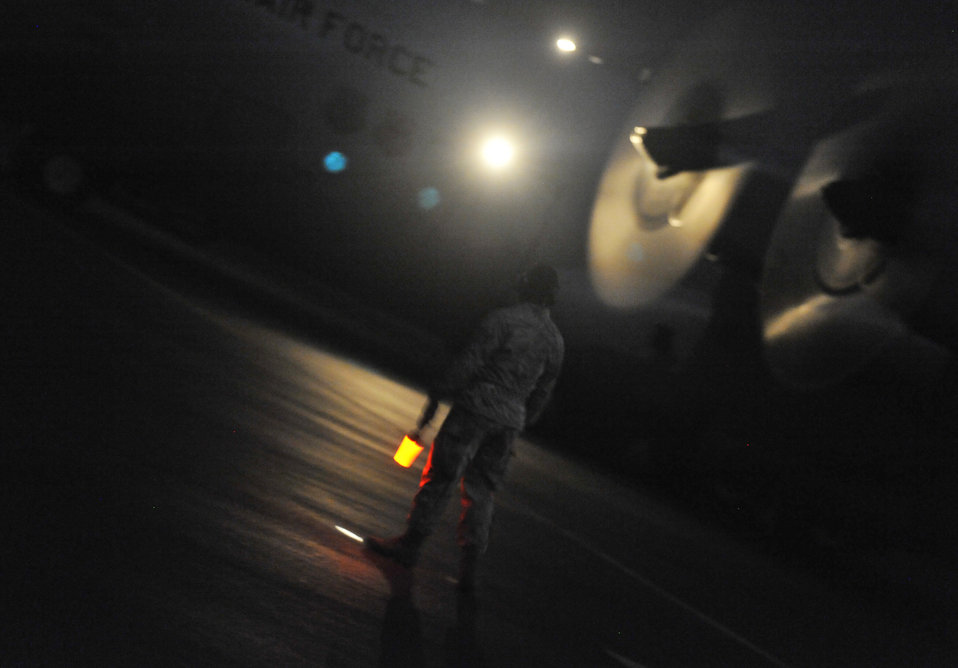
Ready for takeoff

An Airman guides a C-130 Hercules aircraft onto a ramp during a joint operational access exercise Sept. 12, 2011, at Mackall Army Airfield, N.C. JOAX is a joint airdrop exercise designed to enhance service cohesiveness between Army and Air Force personnel, allowing both services an opportunity to properly execute large-scale heavy equipment and troop movement.